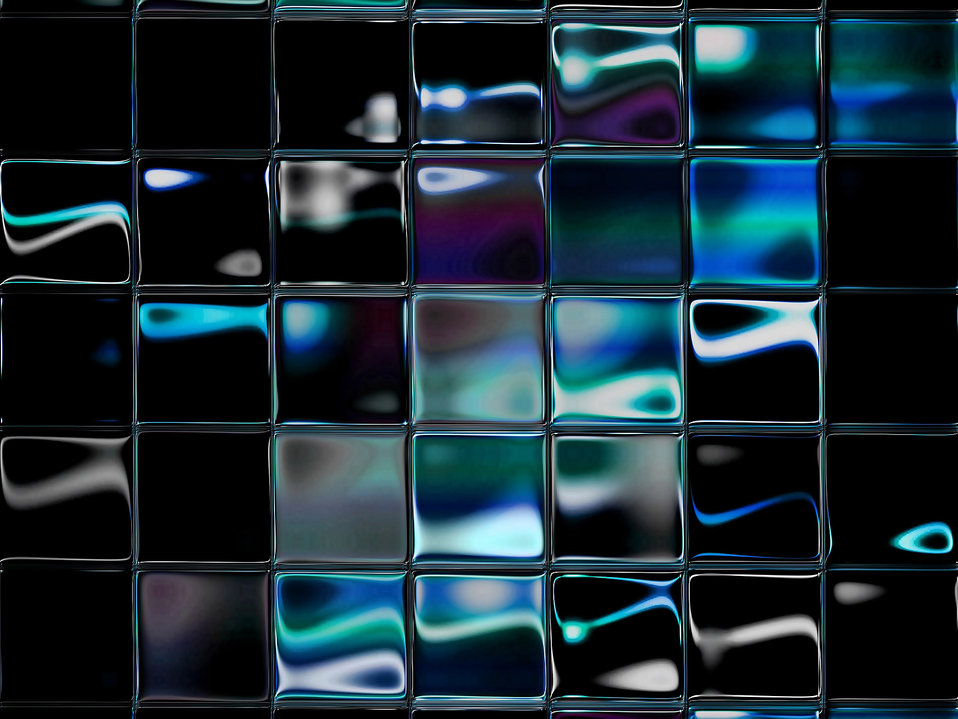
Background 363

Background.